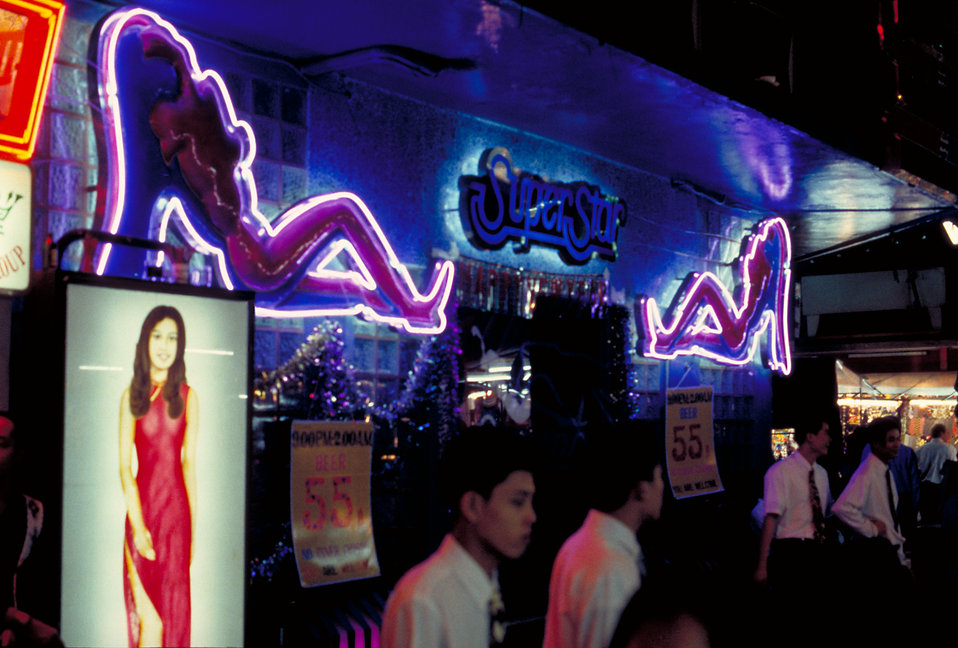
This 1995 photograph depicted the Patpong district, a popular Bangkok, Thailand nighttime entertainment, dining, and shopping locale. The kingdom of Thailand is located in Southeast Asia. It is also known as Siam which was the official name of the country until 1949. Bangkok is the country's largest city as well as its capital.Since the official activities around the King's 60th birthday in 1987, Thailand has become a leading tourist destination for visitors from the newly affluent nations of East Asia as well as Europe. It is important for all travelers to be aware of the potential health hazards of travel to any destination, foreign or domestic.